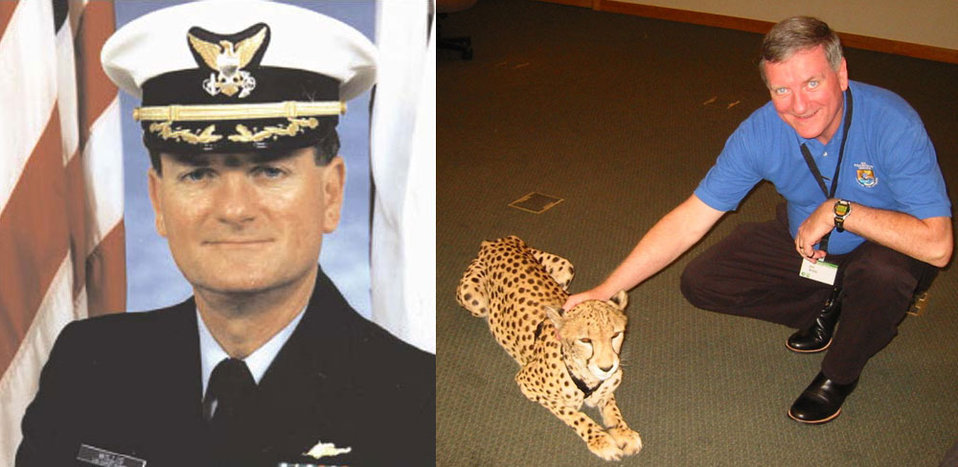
Jim Willis graduated from the U.S. Coast Guard Academy in 1971 and had a 30-year career in U.S. Coast Guard including four ships, two Commanding Officer assignments, two Info Tech assignments and four Training assignments. He finished his Coast Guard career as Deputy Director of all Coast Guard Training, the Coast Guard Leadership Program and the Coast Guard Reserve Forces and has been the Deputy Director of NCTC for the past 10 years.